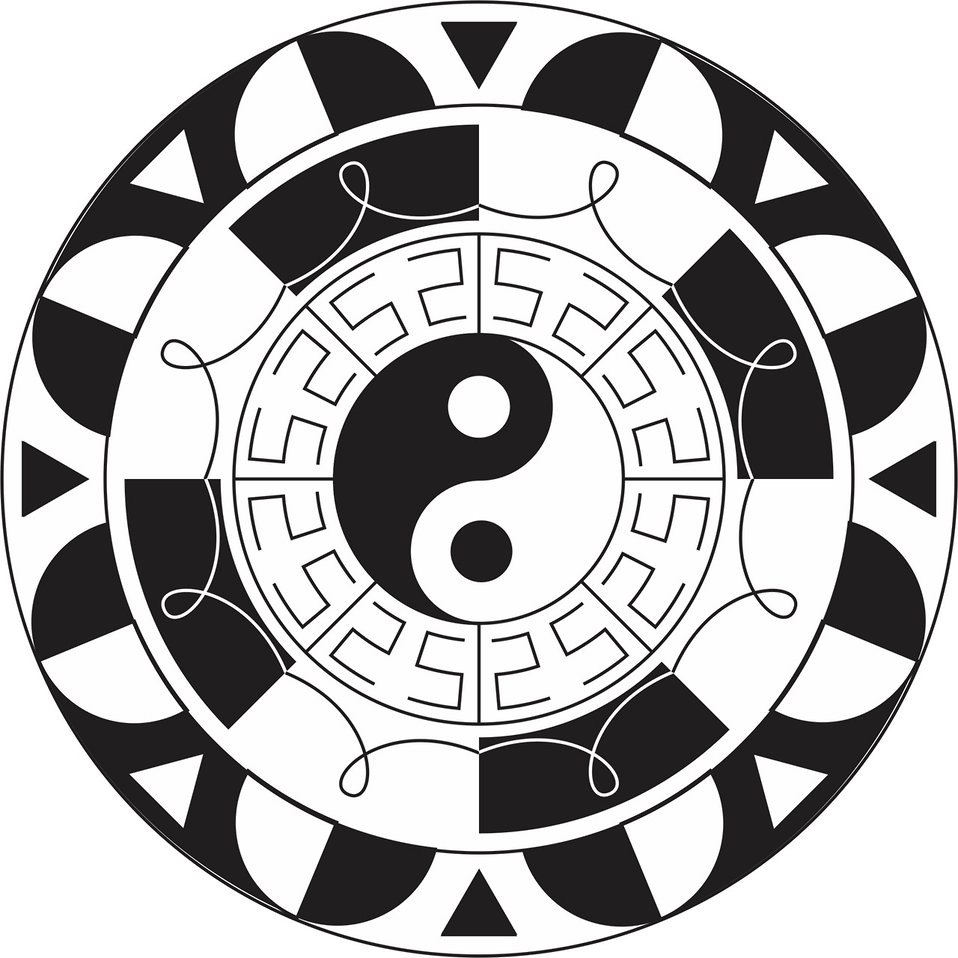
Mandala 1

A mandala in black and white..